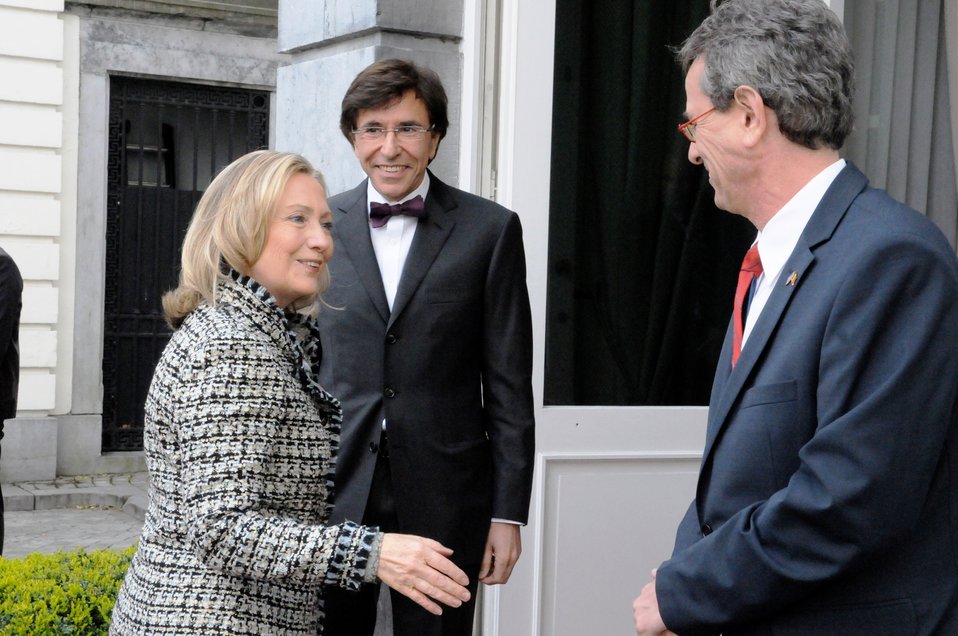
Secretary Clinton Is Greeted By Ambassador Gutman and Belgian Prime Minister Di Rupo

U.S. Secretary of State Hillary Rodham Clinton is greeted by U.S. Ambassador to Brussels Howard Gutman, right, and Belgian Prime Minister Elio Di Rupo, center, upon her arrival at the Prime Minister's residence in Brussels, Belgium, on April 18, 2012.